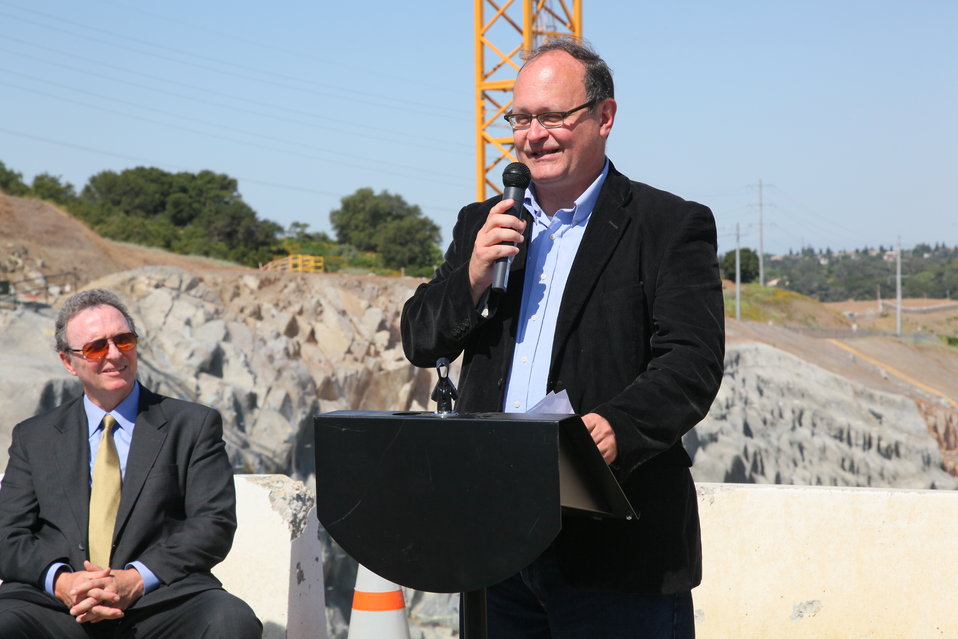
First concrete ceremony for Folsom Dam spillway

David Gore, assistant regional director for the U.S. Bureau of Reclamation Mid-Pacific Region, addresses the crowd at a ceremony commemorating the first concrete placement for the auxiliary spillway control structure at Folsom Dam in Folsom, Calif., May 24, 2012. The U.S. Army Corps of Engineers, together with the Bureau and state and local partners, is building the spillway to reduce flood risk throughout the Sacramento region.